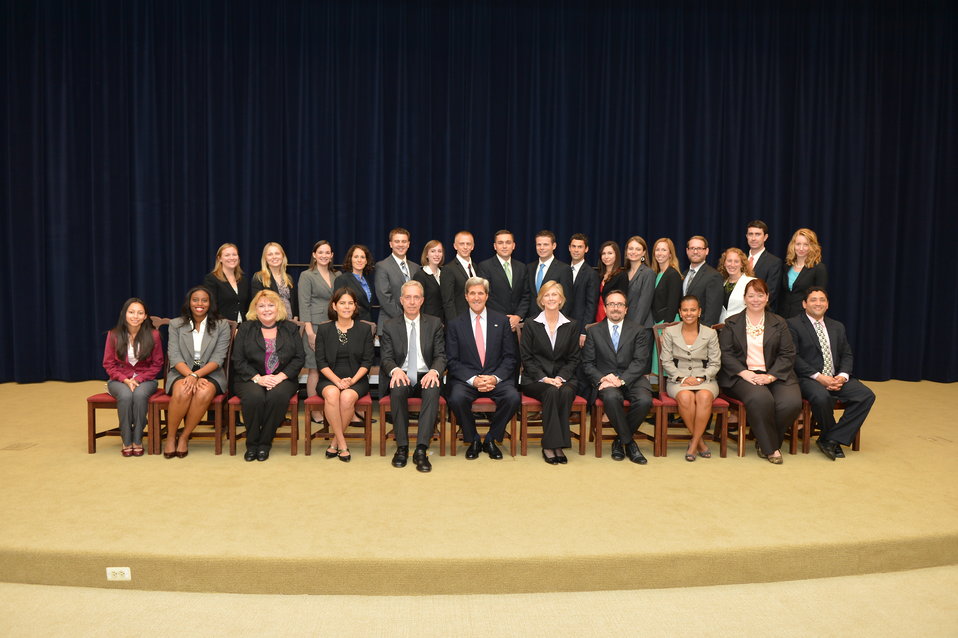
Secretary Kerry Poses for a Photo With the Presidential Management Fellow Orientation Class

U.S. Secretary of State John Kerry hosts a joint swearing-in ceremony for the 174th Foreign Service Generalist Orientation Class and the Presidential Management Fellow Orientation Class at the U.S. Department of State in Washington, D.C., on October 18, 2013.